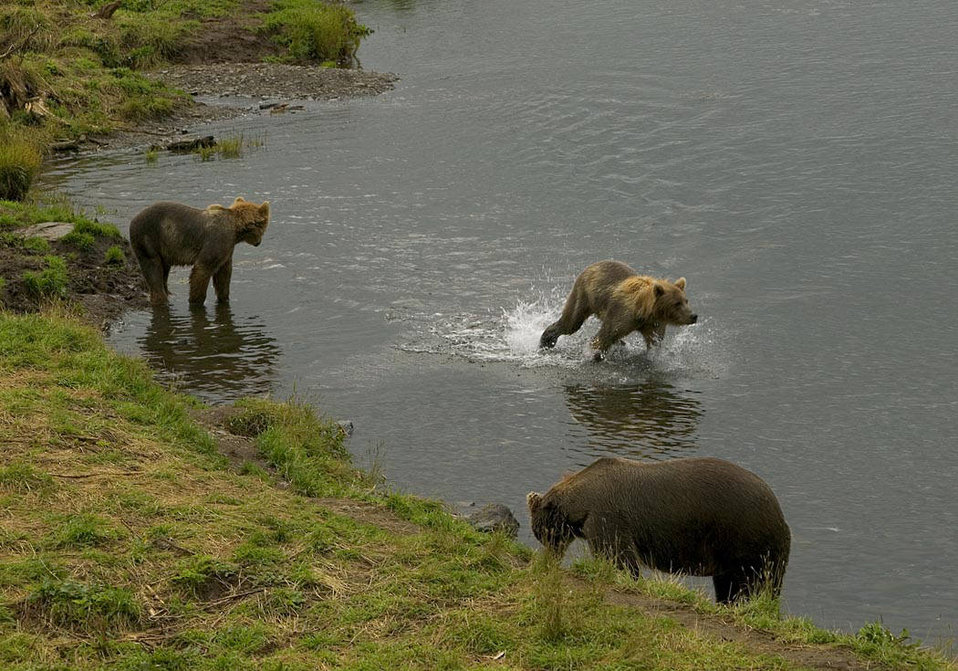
Brown bear and two cubs in stream

Photo credit: USFWS/Steve Hillebrand

Climate is changing worldwide, but the Arctic has already warmed at a rate almost twice the global average.